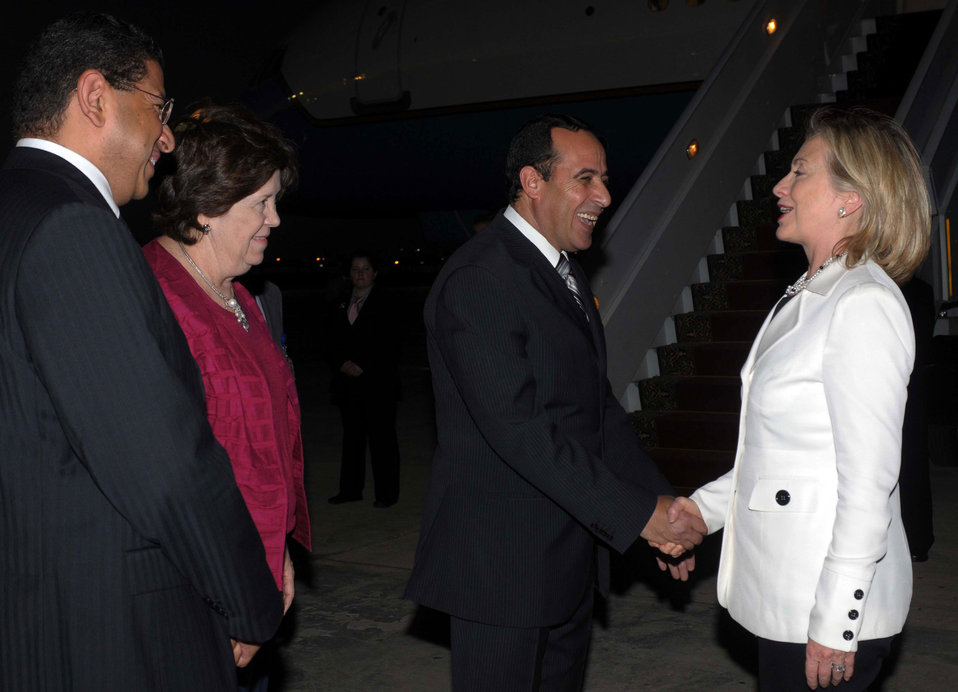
Secretary Clinton Bids Farewell to Governor Metwali, Ambassador Scobey, and an Egyptian Foreign Ministry Official

U.S. Secretary of State Hillary Rodham Clinton bids farewell to Mohamed Hani Metwali, Governor of Egypt's South Sinai governorate, U.S. Ambassador to Egypt Margaret Scobey, and an official from the Egyptian Foreign Ministry look on in Sharm El-Sheikh, Egypt, on September 14, 2010.